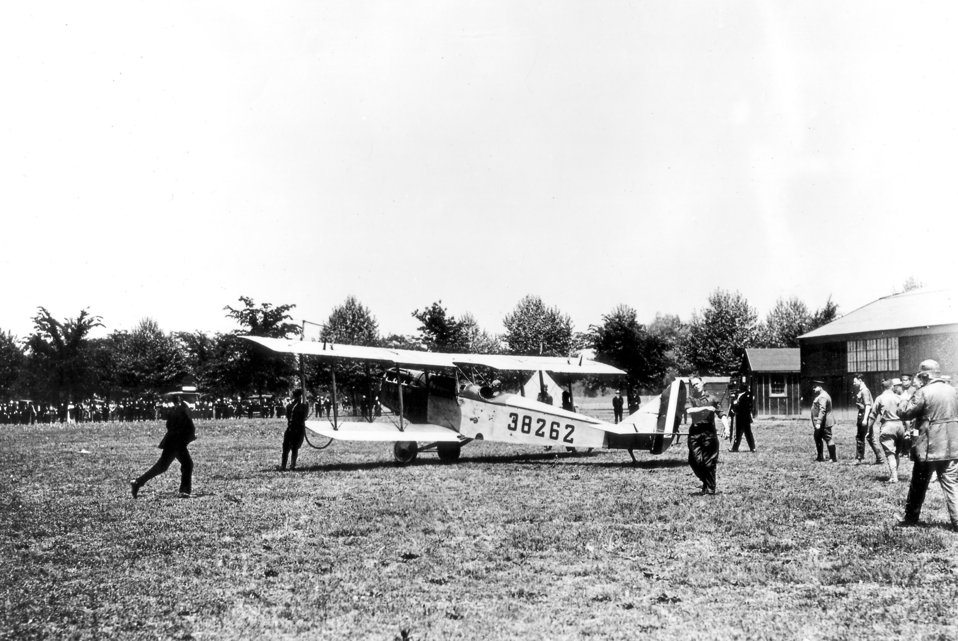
Curtiss JN4-H Jenny

EARLY YEARS-- Lt. George Boyle gets ready to fly a modified Curtiss JN4-H Jenny during the inauguration of U.S. airmail service in Washington, D.C. on May 15, 1918. Unfortunately, Lt. Boyle got lost and didn't arrive at his destination.